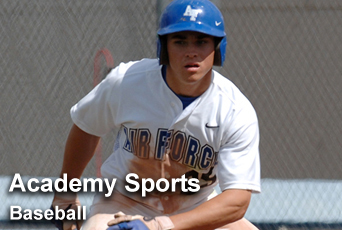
Academy sports: Baseball

For up-to-date scores on all U.S. Air Force Academy sports, visit their Web site at www.goairforcefalcons.com.